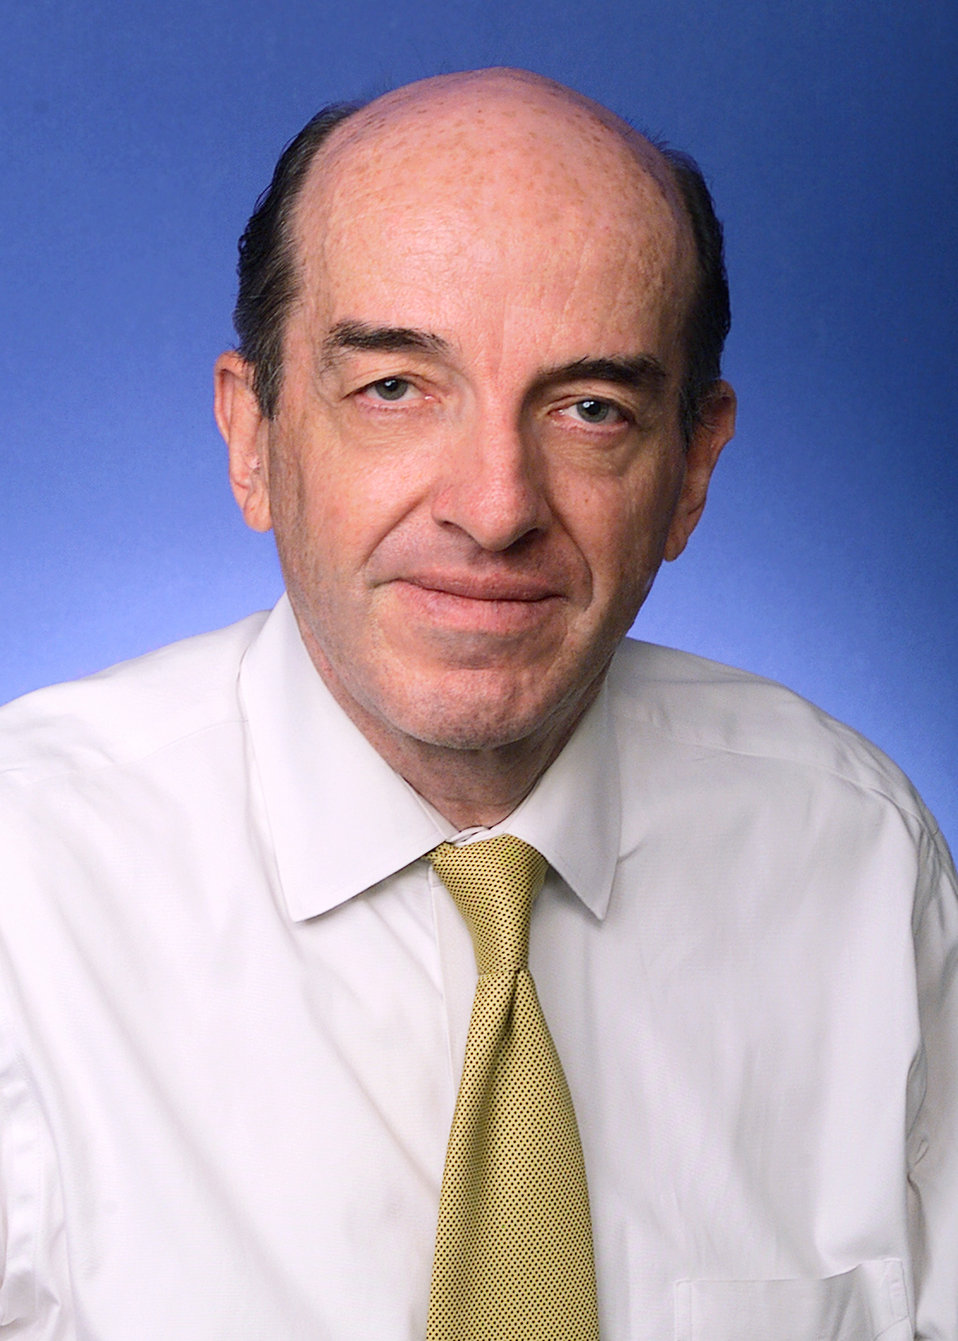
Michael Copps 6